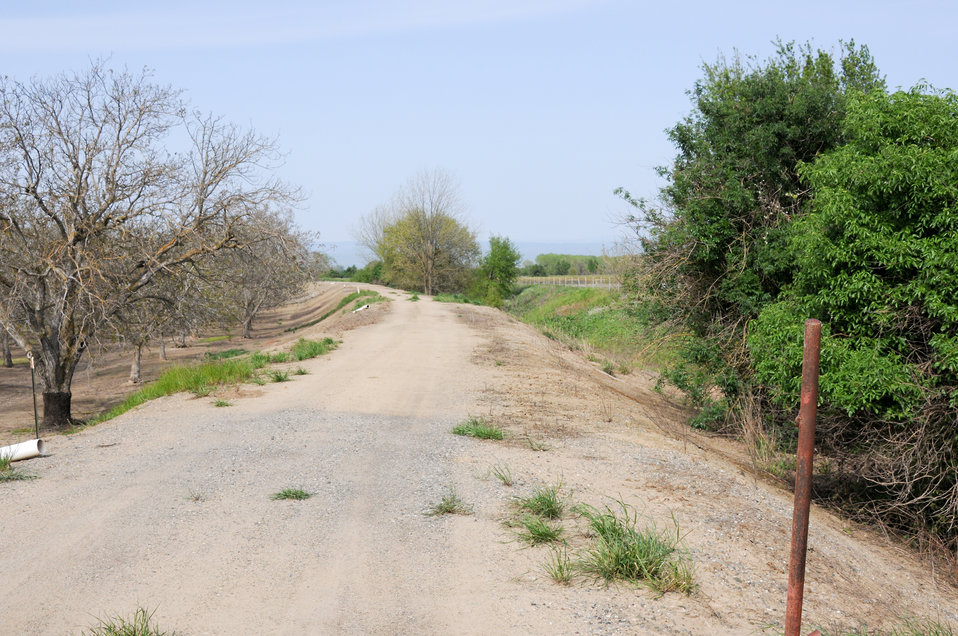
Orchard/Levee/Mature elderberry shrub

The current, degraded levee known as the “J levee,” separates privately owned orchards (left) and natural flood plain (right) near Hamilton City, Calif., April 14, 2011. A mature elderberry plant on the far right is home to the valley elderberry longhorn beetle, which has been listed as a federally threatened species since 1980.